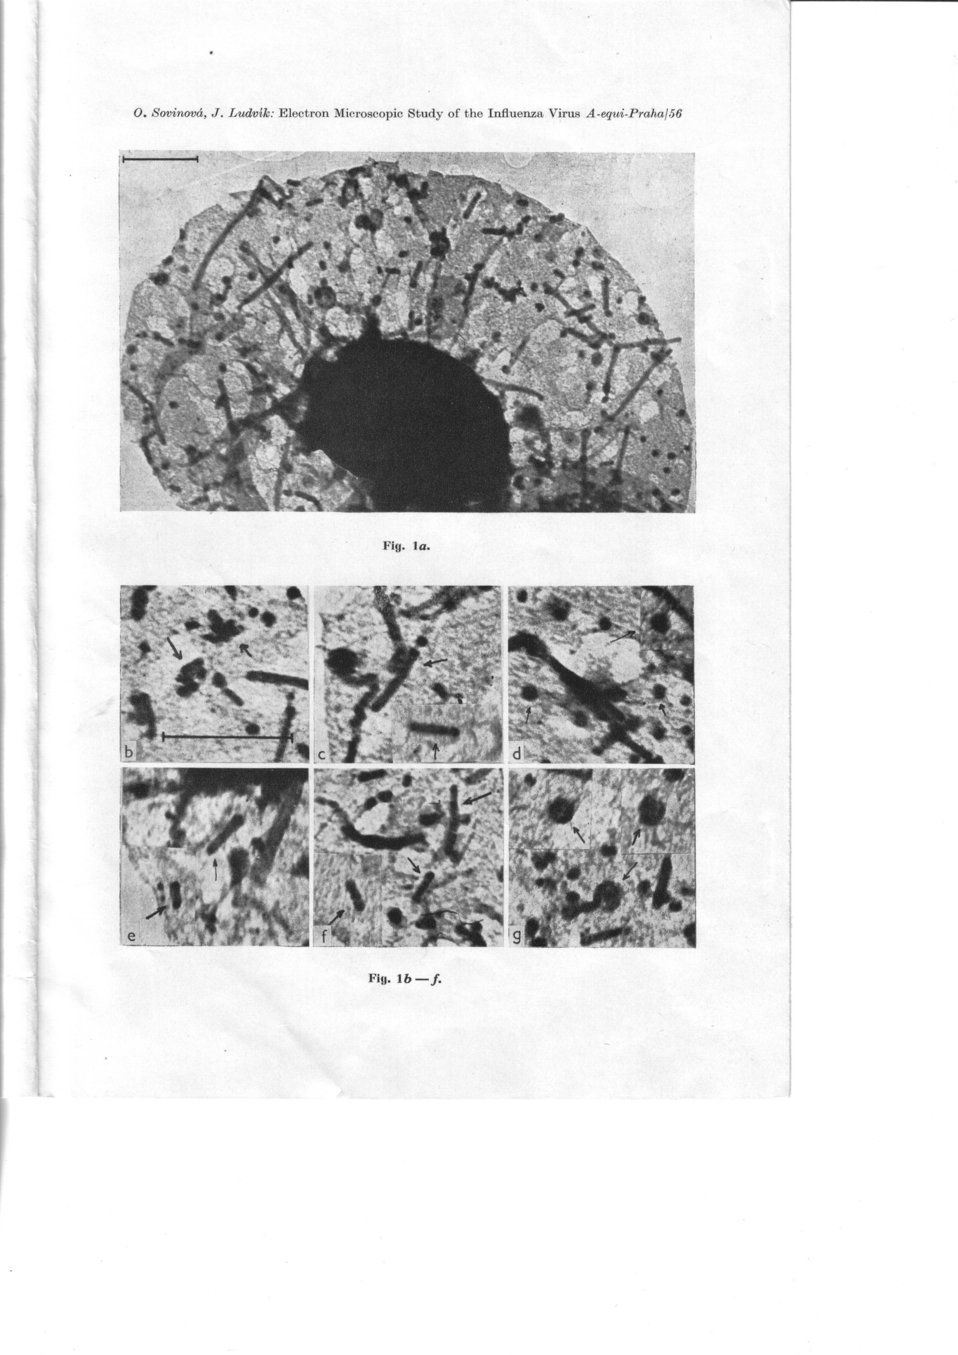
Čeština: Acta Virologica